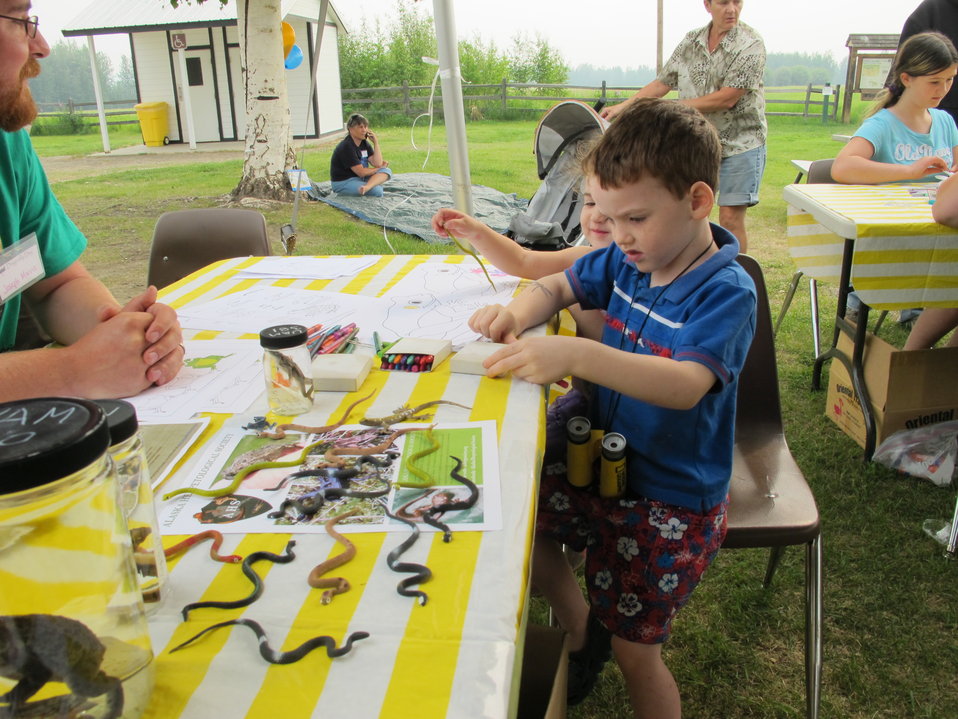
Learning about the relationship between dragonflies and amphibians in the ecosystem

(USFWS)